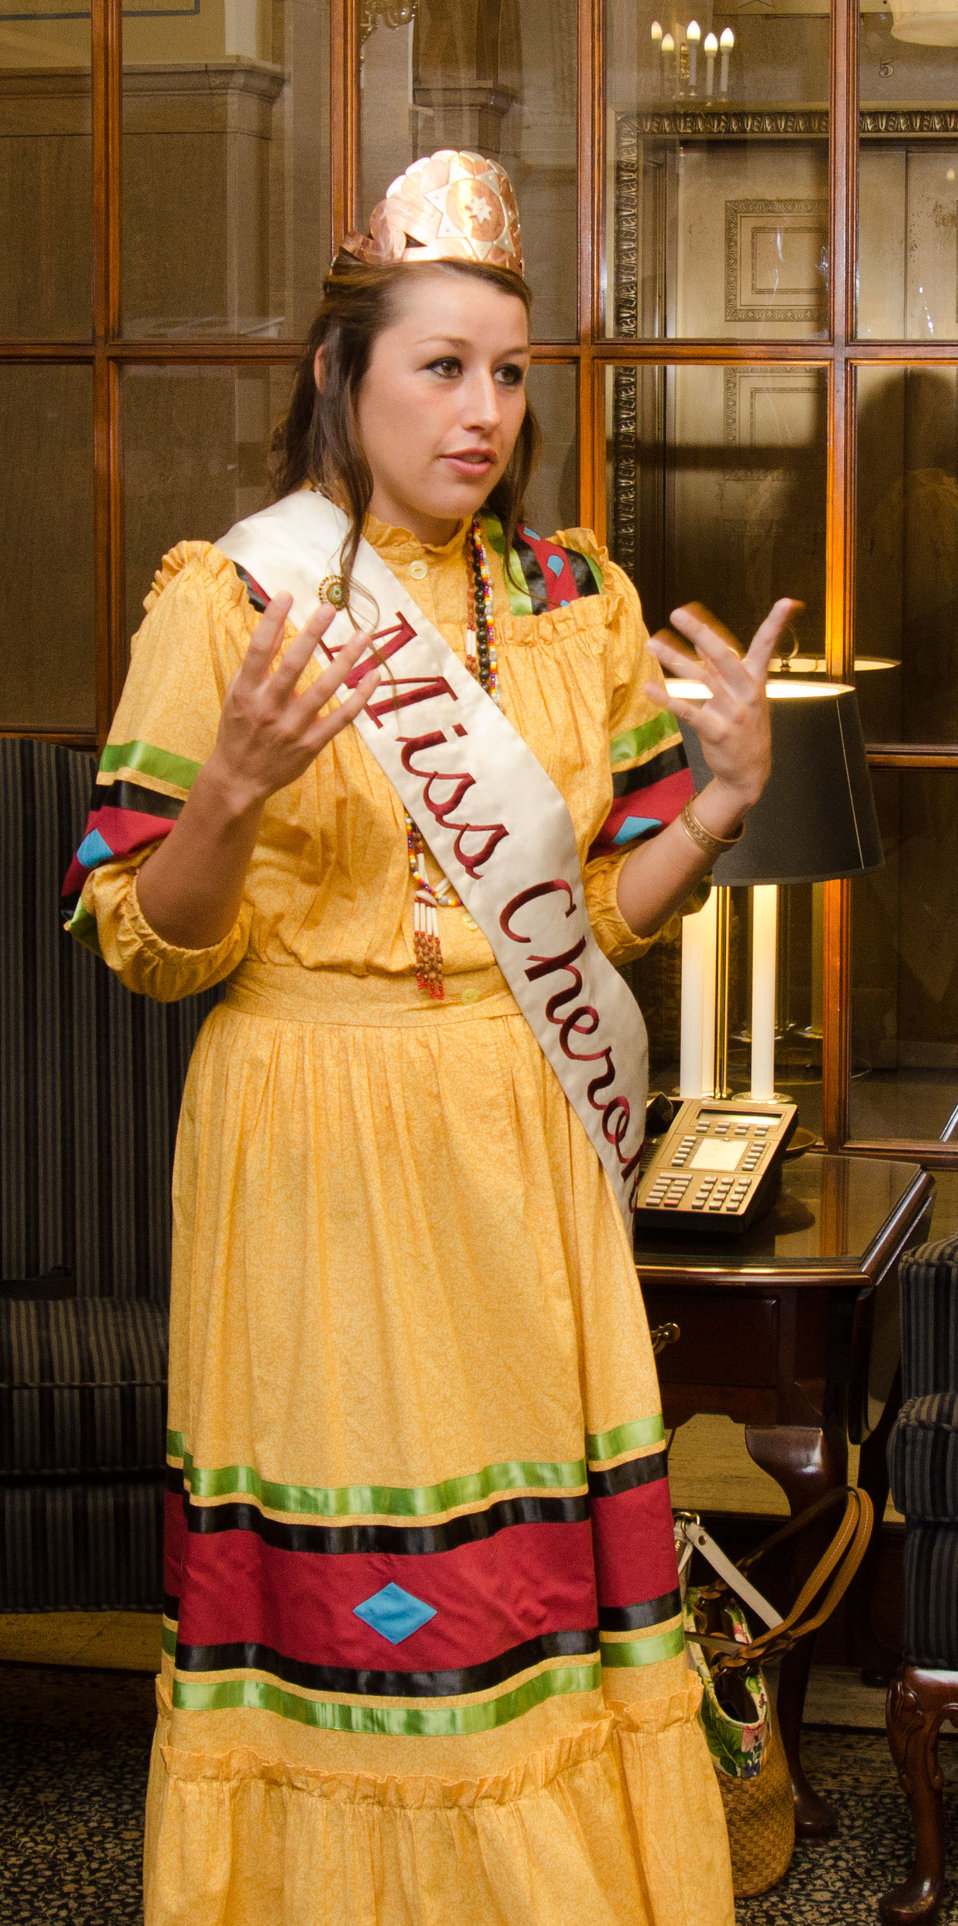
Miss Cherokee 2010-2011 Brooke Hudson and officers of the Cherokee nation met with U.S. Department of Agriculture staff members in Washington, DC, on Tuesday, August 9, 2011 USDA Photo by Lance Cheung.